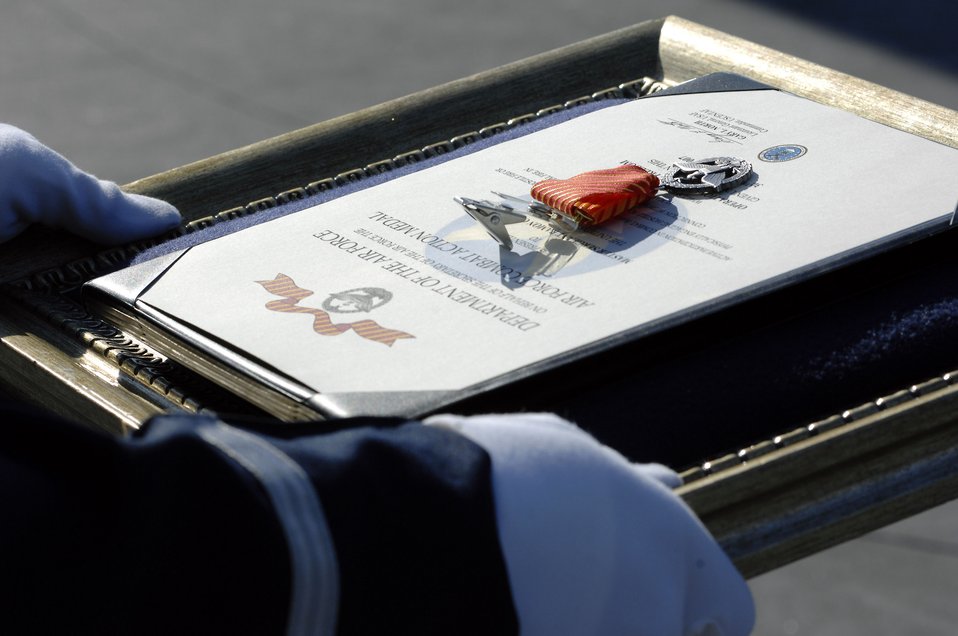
Modernizing an old design a challenge for medal makers

The Air Force Combat Action Medal was presented to six Airmen June 12 in Arlington, Va. They were the first to receive the medal in a ceremony held at the Air Force Memorial in Arlington, Va.